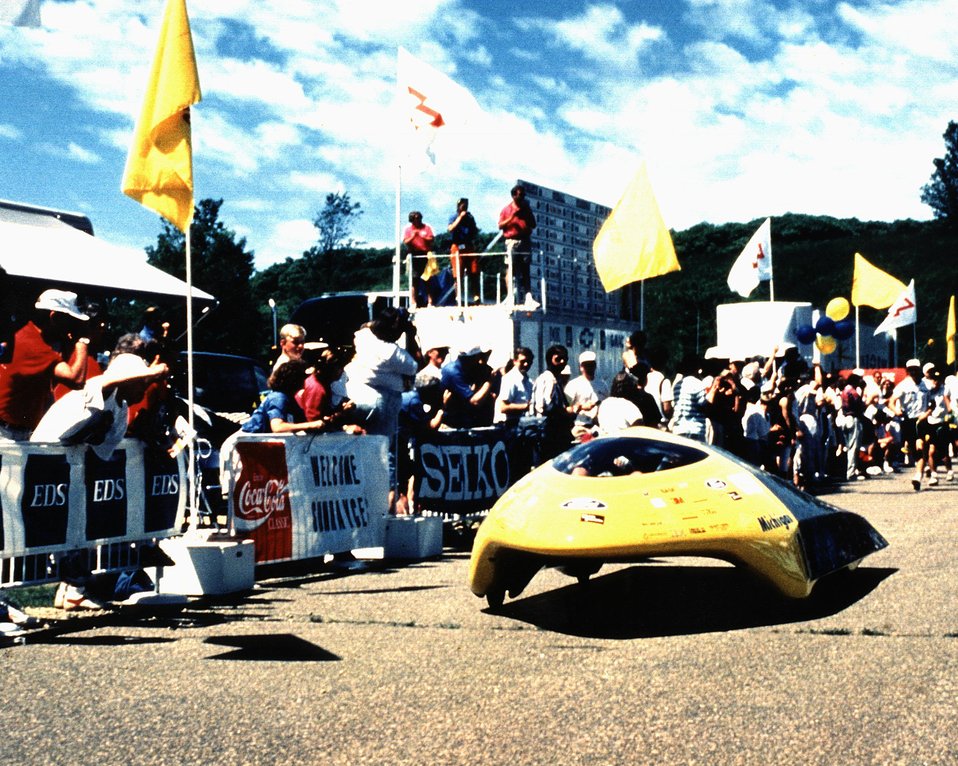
UNIVERSITY OF MICHIGAN'S 'MAIZE & BLUE' TAKING FIRST PLACE AS IT CROSSES THE FINISH LINE. THE TEAM CONSISTED OF OVER 100 ENGINEERING AND BUSINESS SCHOOL STUDENTS.